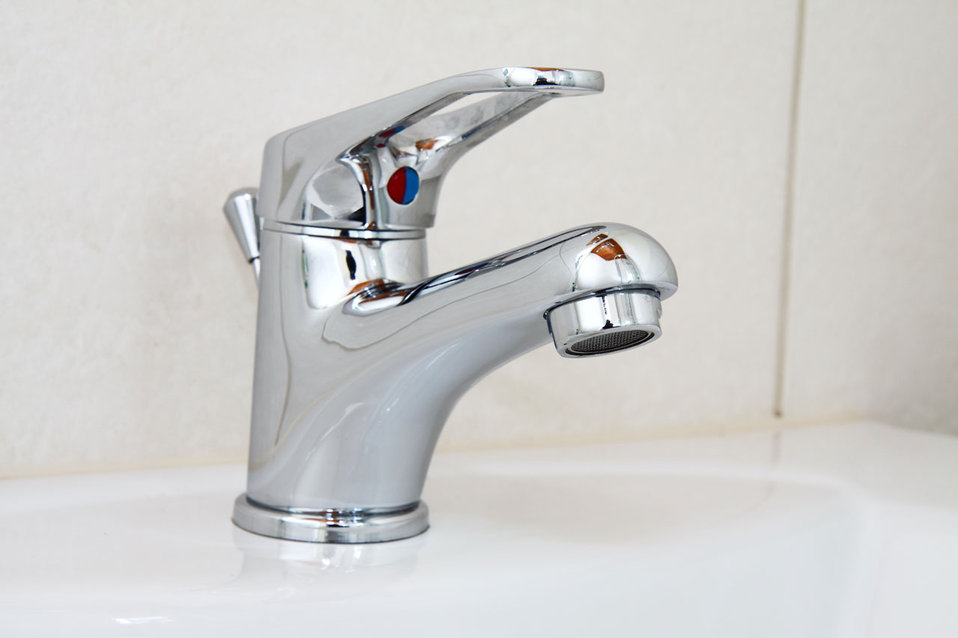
Water tap in bathroom.